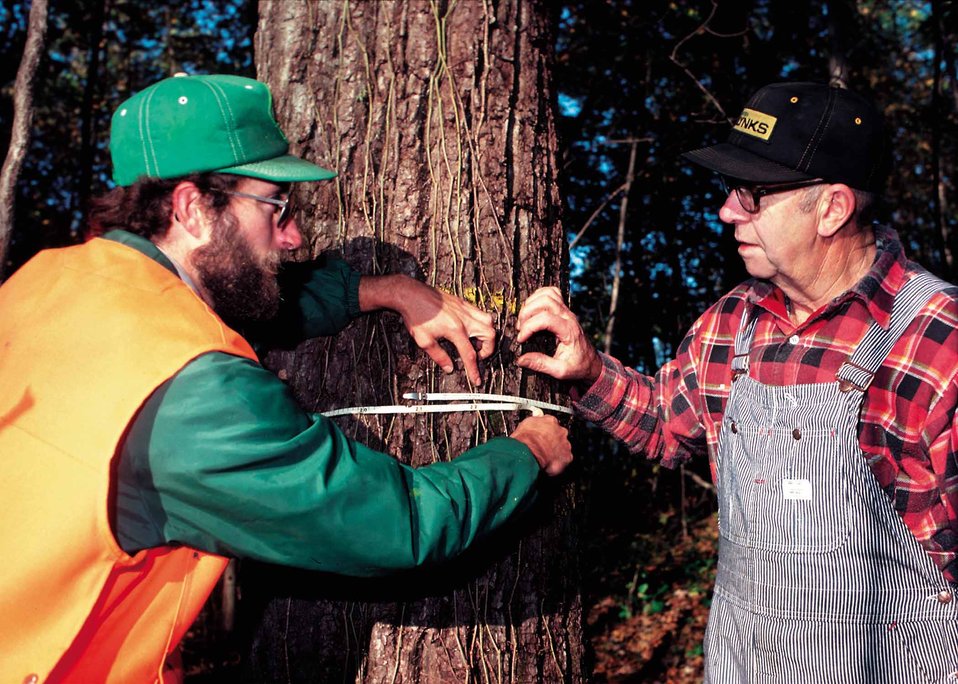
Iowa DNR forester counsels a woodland owner in northeast Iowa on sale of mature trees.